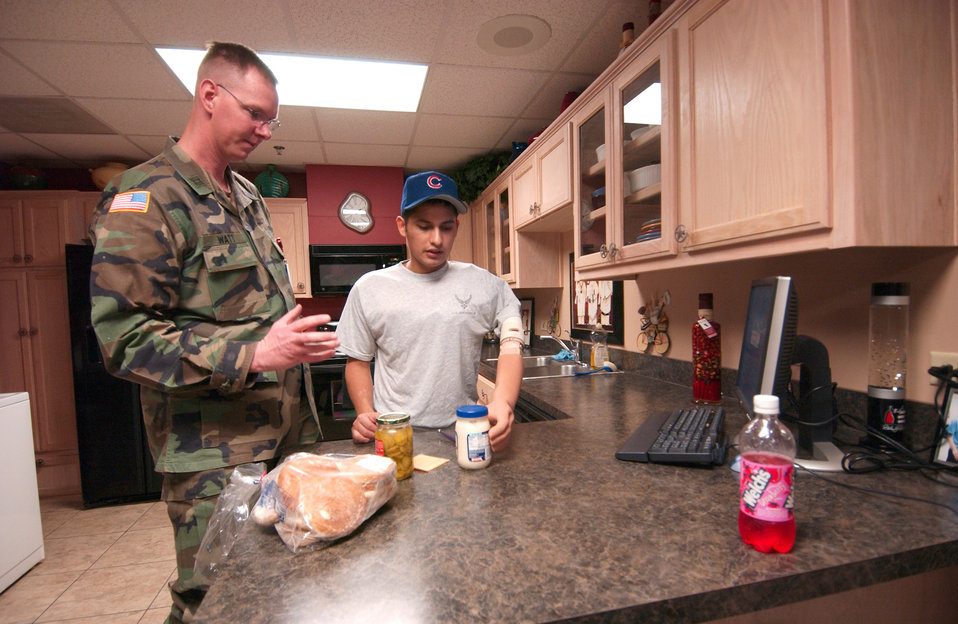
Airman wants to continue to serve

Army Capt. James Watt, an occupational therapist, helps Senior Airman Dan Acosta make a sandwich Thursday, Feb. 23, 2006, in the life skills area of the amputee rehabilitation clinic at Brooke Army Medical Center in San Antonio. A mock apartment in the center helps patients get used to completing common tasks with their prosthetic limbs.